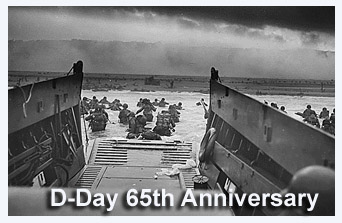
D-Day Anniversary

On June 4, 1944, one of the largest Allied campaigns began on the beaches of Normandy.